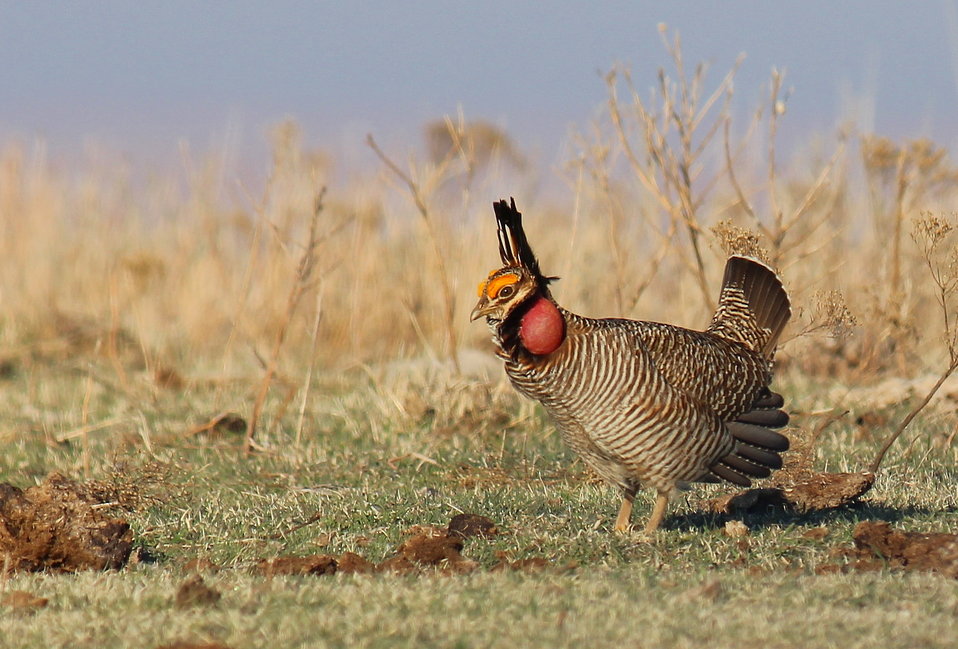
Lesser Prairie-Chicken in the Red Hills

Lesser prairie-chicken on a lek in the Red Hills of Kansas

Location: Ranch in South Central KS

Credit: Greg Kramos / USFWS

Photo Contest Entry #68